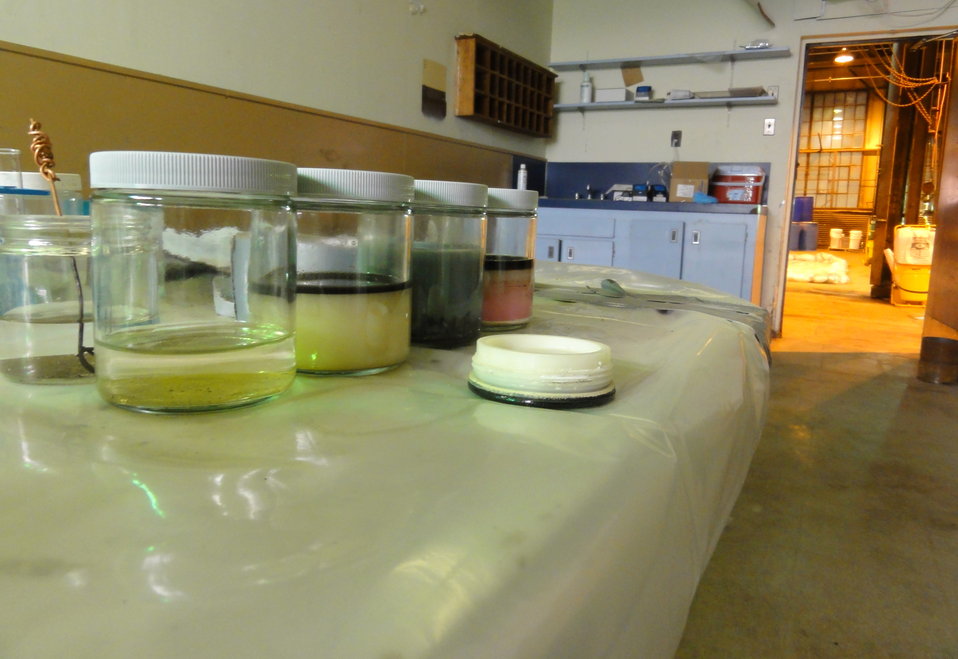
December 2, 2012 - EPA 'HazCatt' room at the Staten Island Collection Area

With unknown liquids, response teams carefully put small samples through a series of tests to determine their chemical nature. HazCatt stands for 'hazard categorization'. EPA is targeting the removal of household hazardous waste and performs these tests as an added precaution.